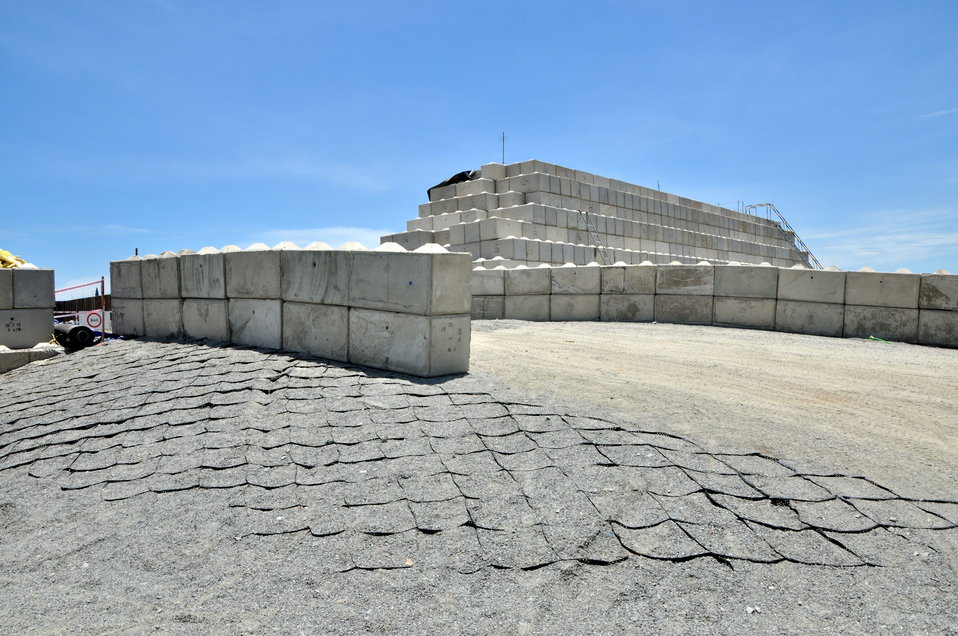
Environmental Remediation Progress at the Danang Airport site

Progress at the Remediation of Dioxin Contamination Project Site

Danang, Vietnam, June 5, 2013